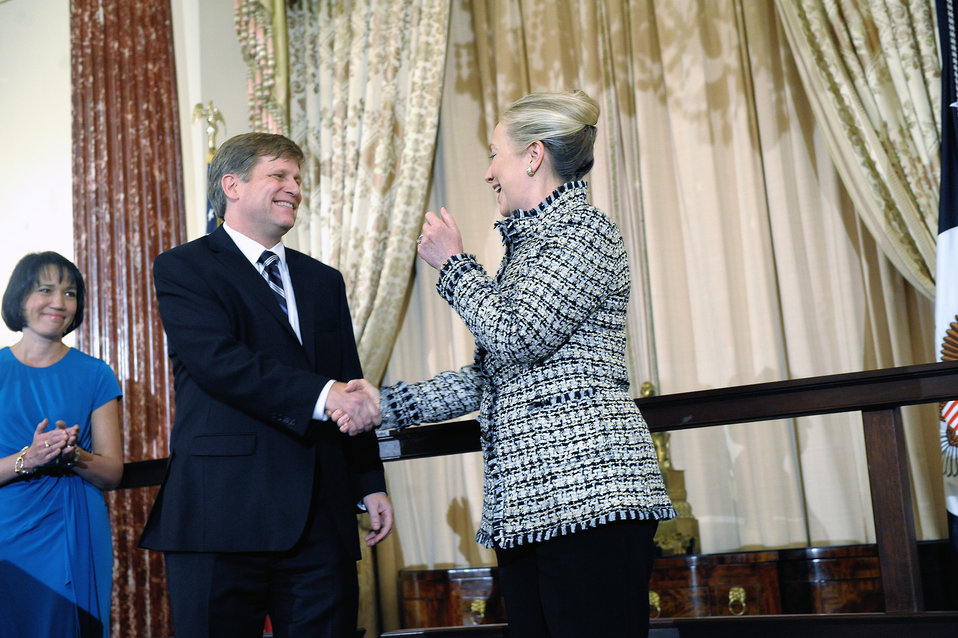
Secretary Clinton Holds a Swearing-In Ceremony for Ambassador-Designate McFaul

U.S. Secretary of State Hillary Rodham Clinton holds a swearing-in ceremony for U.S. Ambassador-designate to Russia Mike McFaul at the U.S. Department of State in Washington, D.C., on January 10, 2012.